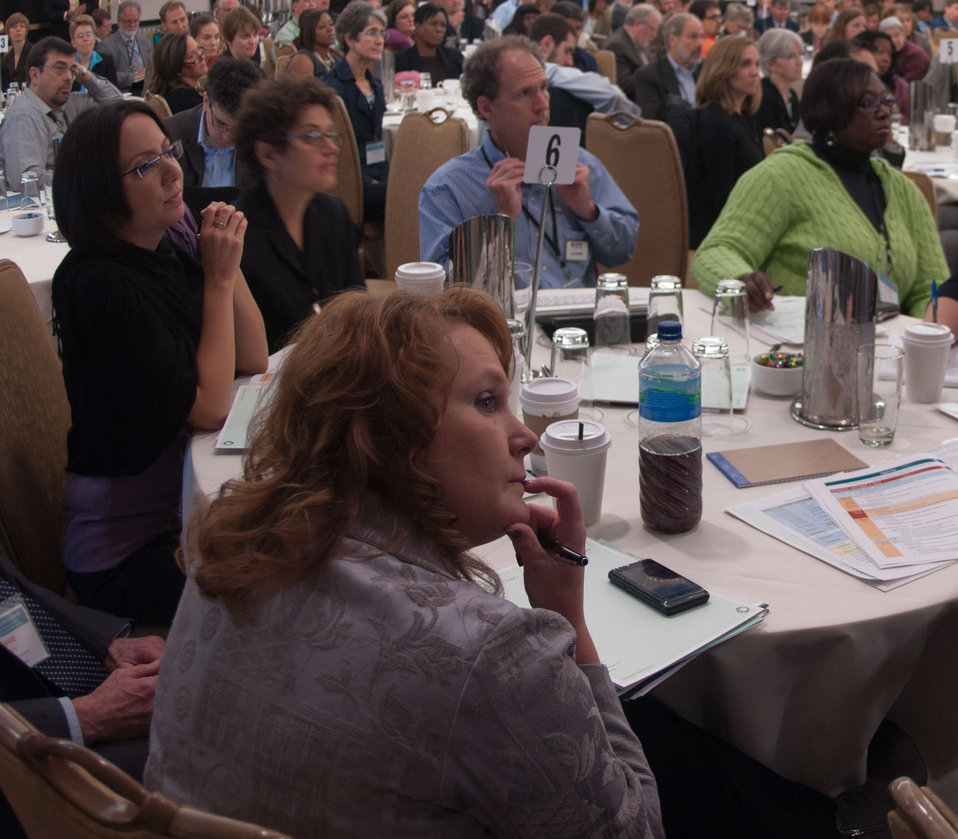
Participants listen to Agriculture Secretary Tom Vilsack's keynote address during the Rural Wealth Creation and Livelihoods national conference for practitioners, researchers and policymakers, held at the Dupont Hotel, Washington DC, on Monday October 3, 2011. USDA partnered with the Ford Foundation to sponsor the conference.